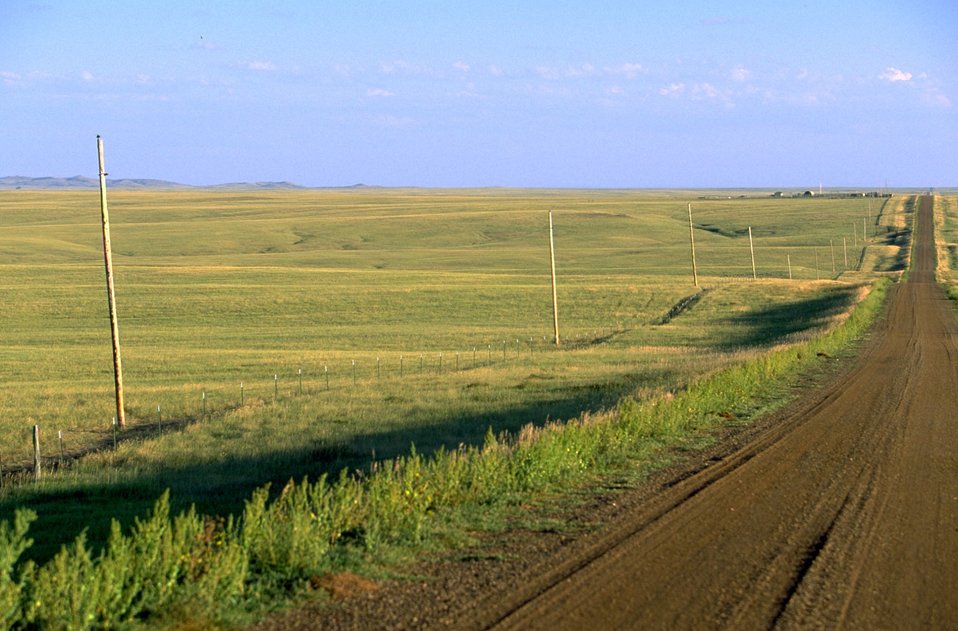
Powerline Right-of-Way 35 miles north of Belle Fourche